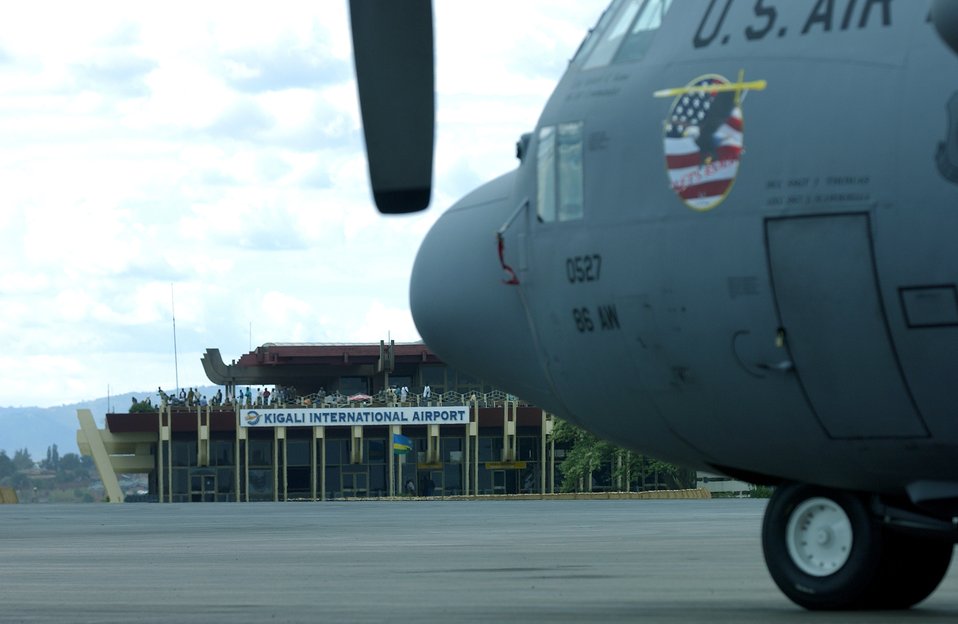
Airmen prepare for humanitarian relief efforts

KIGALI, Rwanda -- A C-130 Hercules from Ramstein Air Base, Germany, carrying Airmen and supplies, arrives at the international airport here Oct. 24. About 120 Airmen deployed to Rwanda to help move African Union troops to Sudan's Darfur Region.